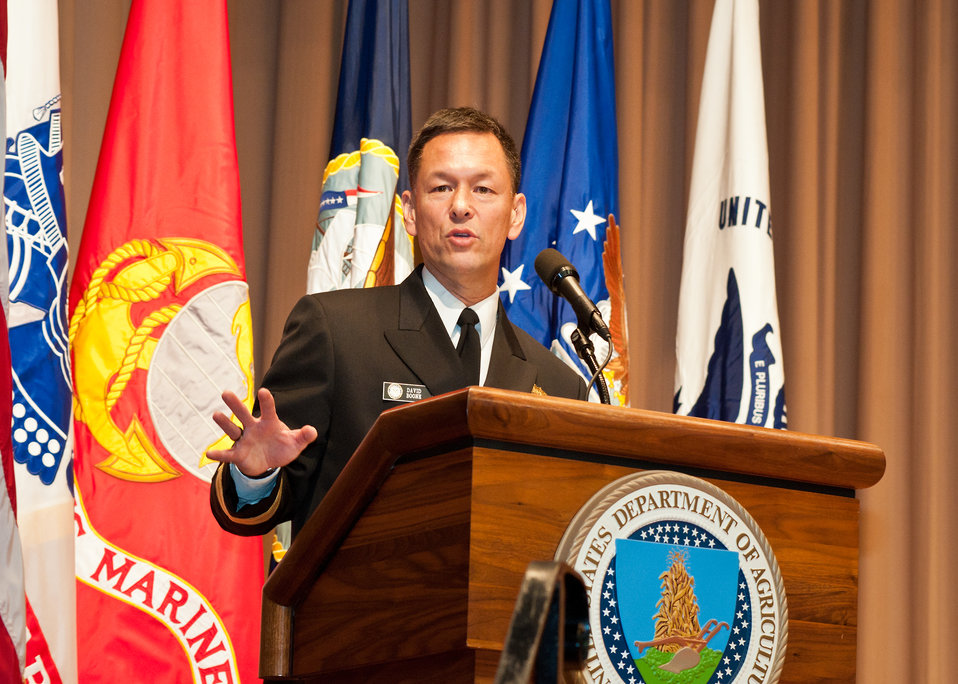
Rear Admiral David Boone, Director, Shore Readiness (OPNAV N46) Deputy Chief of Naval Operations, U.S. Navy, addresses employees at the United States Department of Agriculture Veteran’s Day celebration in Washington, DC, Thursday, November 10, 2011.